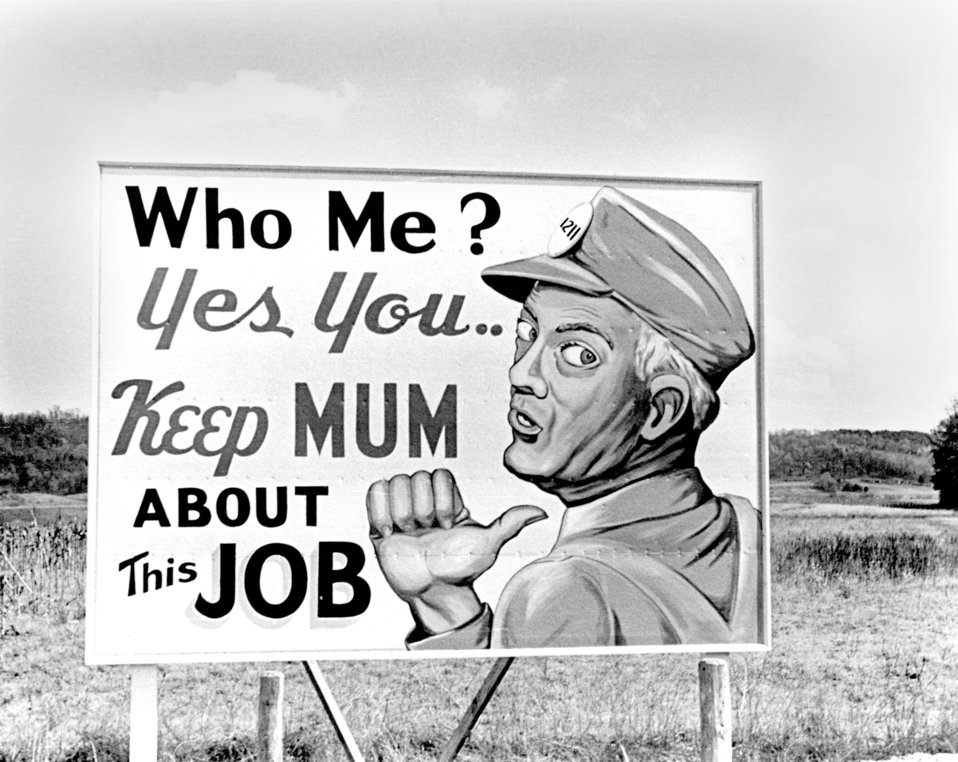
Billboard 1944 Oak Ridge

228-18 DOE photo Ed Westcott 4-15-1944 Oak Ridge Tennessee